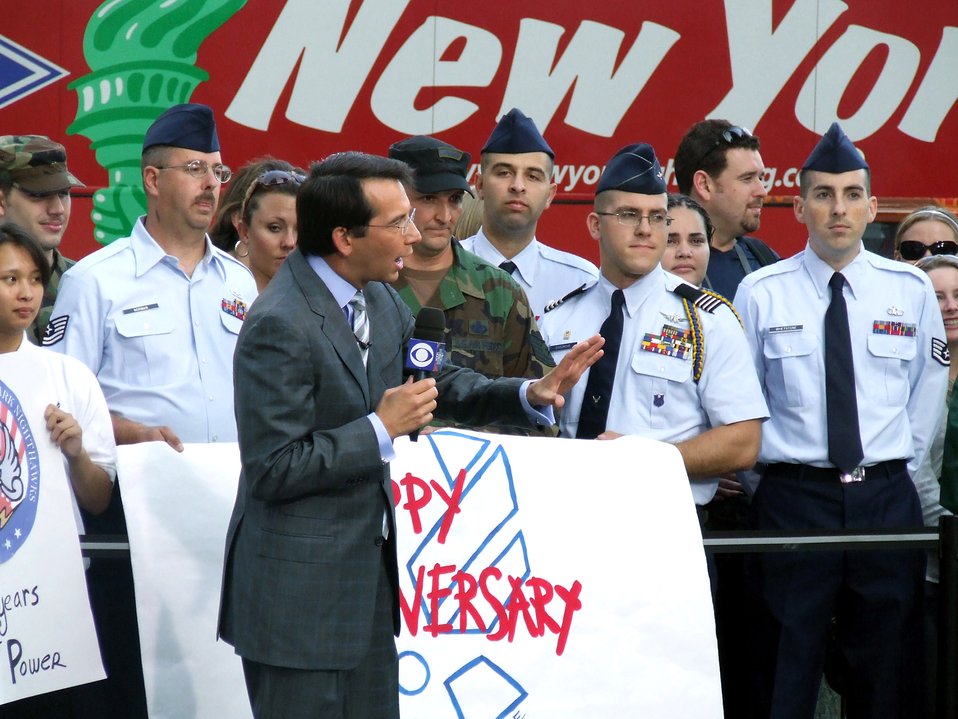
CBS' 'The Early Show' recognizes AF 60th anniversary

Weather anchor and feature reporter Dave Price from CBS'